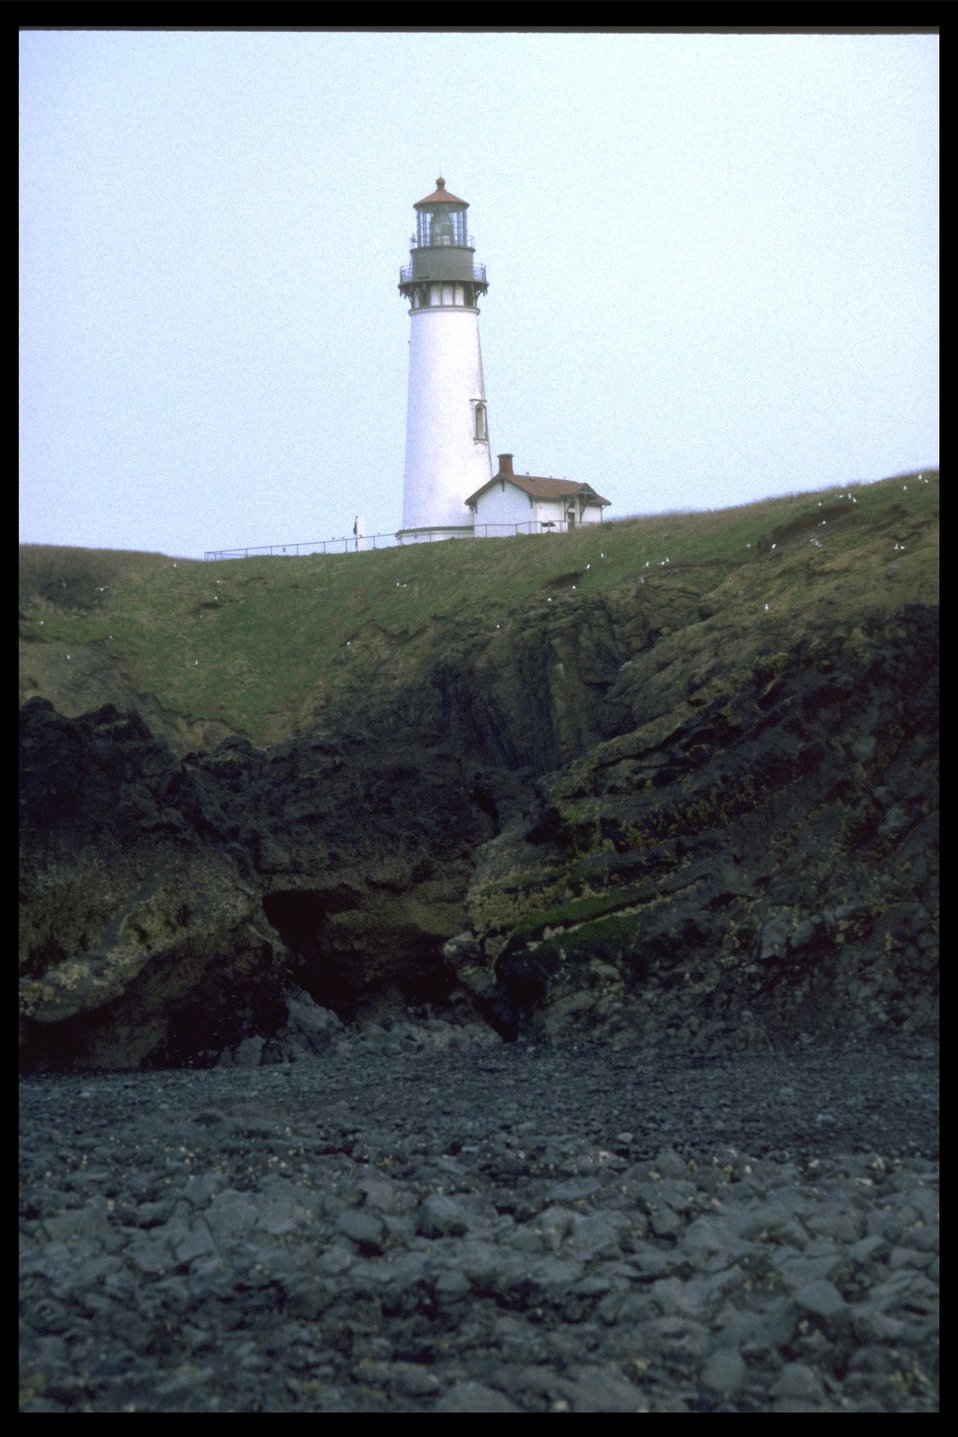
Yaquina Head Lighthouse.